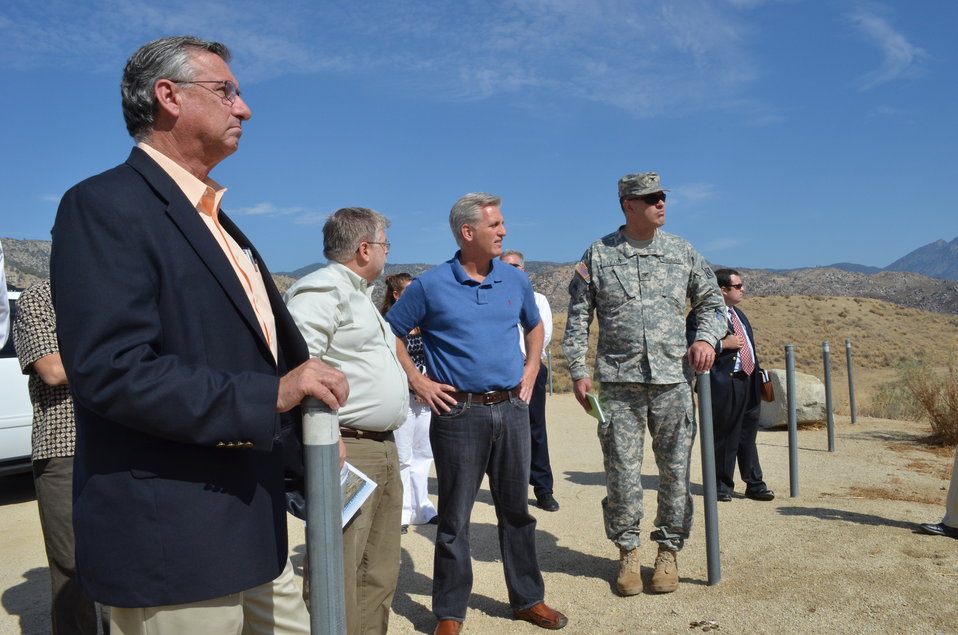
Congressman, Corps officials tour Isabella Lake

From left to right: Jon McQuiston, Kern County District 1 Supervisor; Rick Poeppelman, chief of the engineering division, U.S. Army Corps of Engineers Sacramento District; U.S. Rep. Kevin McCarthy; and Col. Bill Leady, commander of the Corps’ Sacramento District, take a moment to look at Isabella Lake Auxiliary Dam during a site visit to Isabella Lake, Calif., Aug. 16, 2012. The Corps discussed its tentatively selected plan to modernize the main and auxiliary dams with the congressman, local officials and media during the visit.